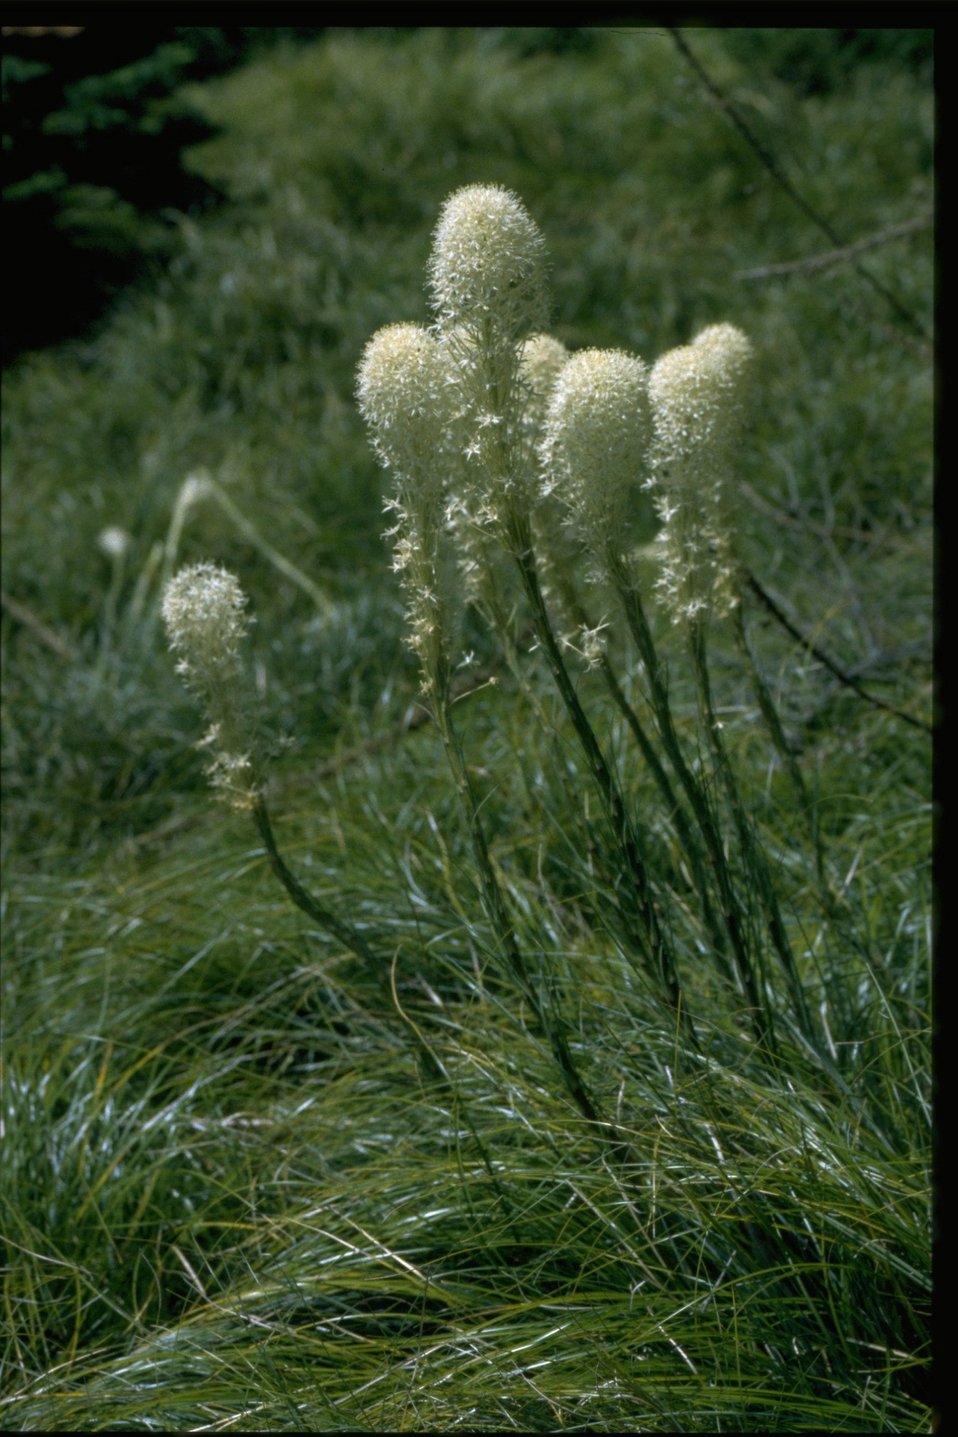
Medium shot of Xenophyllum tenax.